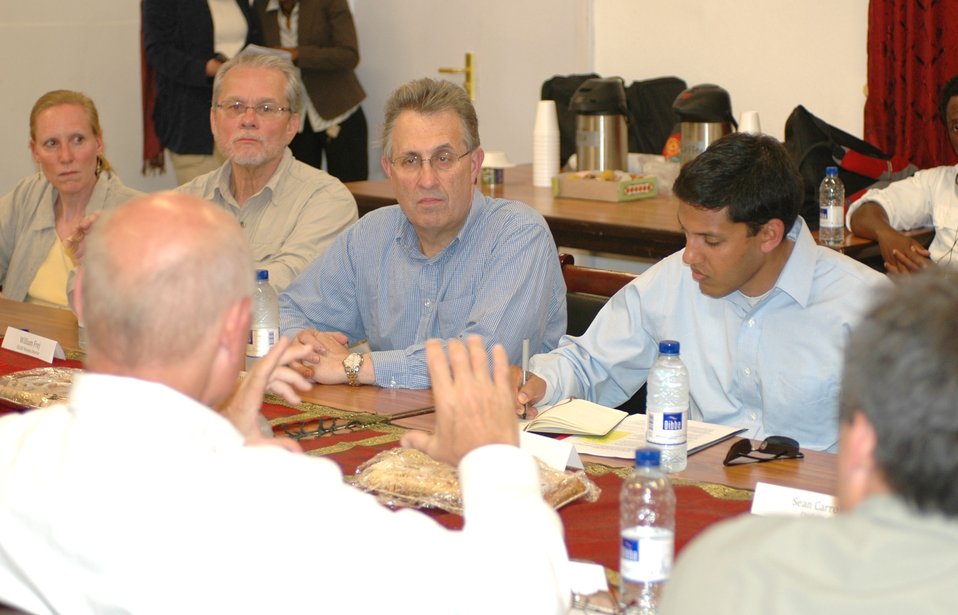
Dr Shah Visits Kandahar April 9, 2010